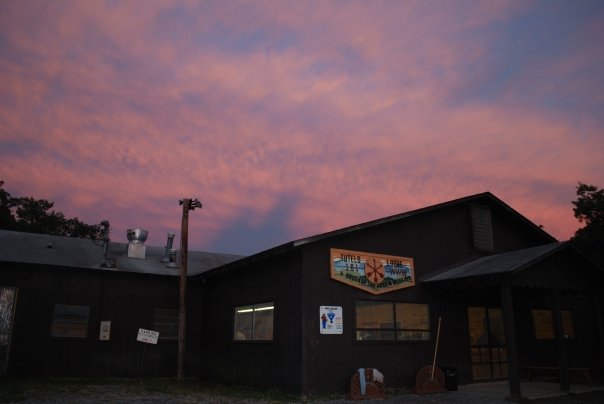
The dining hall at camp ottari